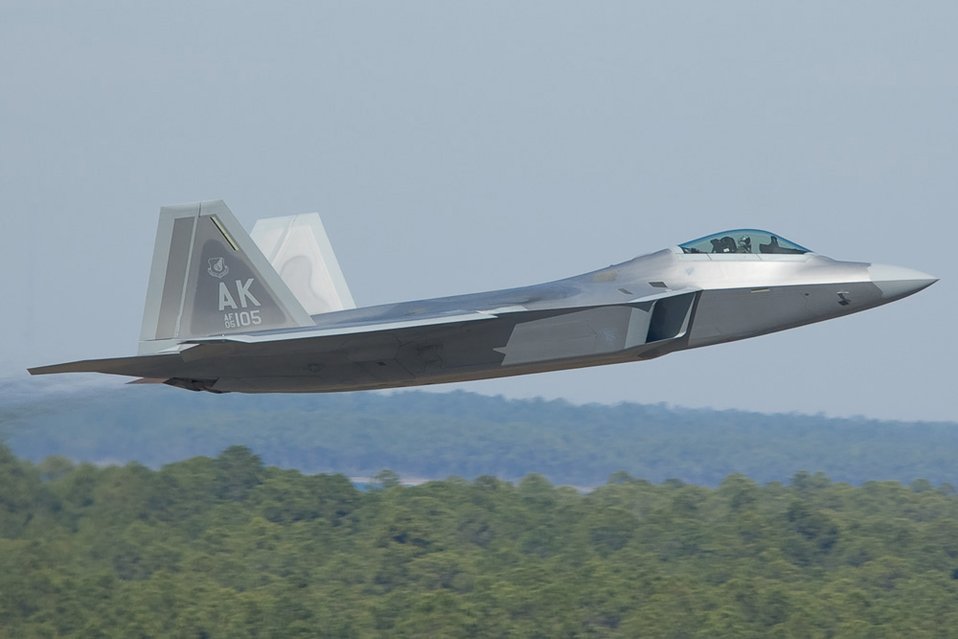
Elmendorf Airmen complete first F-22 deployment

An F-22 Raptor flies Feb. 4 over Tyndall Air Force Base, Fla. Members of the 3rd Wing and Air Force Reserve Command's 477th Fighter Group from Elmendorf AFB, Alaska, combined for its first F-22 Raptor deployment to Tyndall AFB for Combat Archer. The 132 Reserve and active-duty Airmen and eight F-22s from Alaska were in Florida for Weapons System Evaluation Program training.